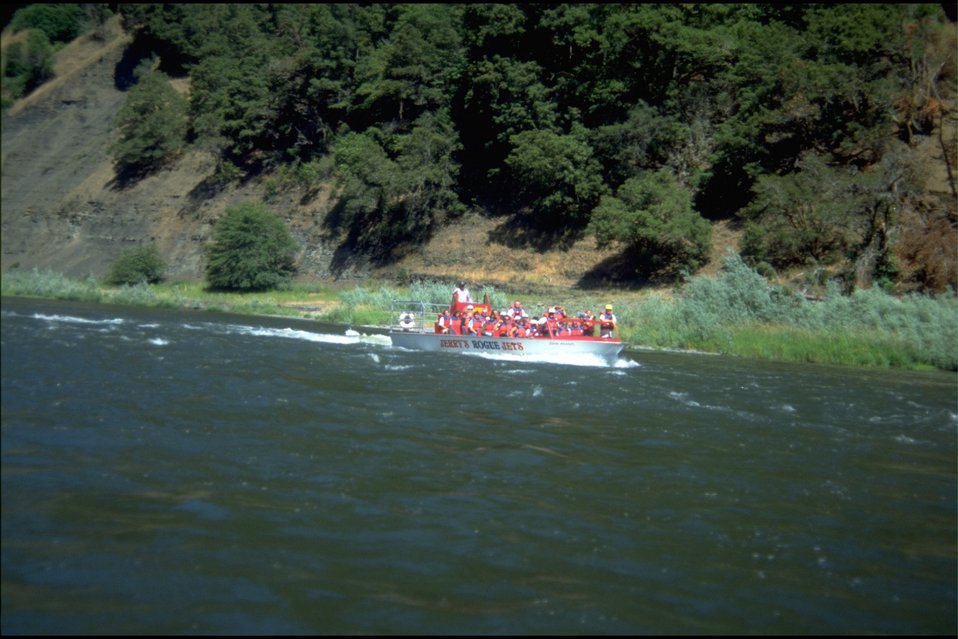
Rogue River - Wild section. Commercial Jet boat from Gold Beach "Jerry's Rogue Jet boats".